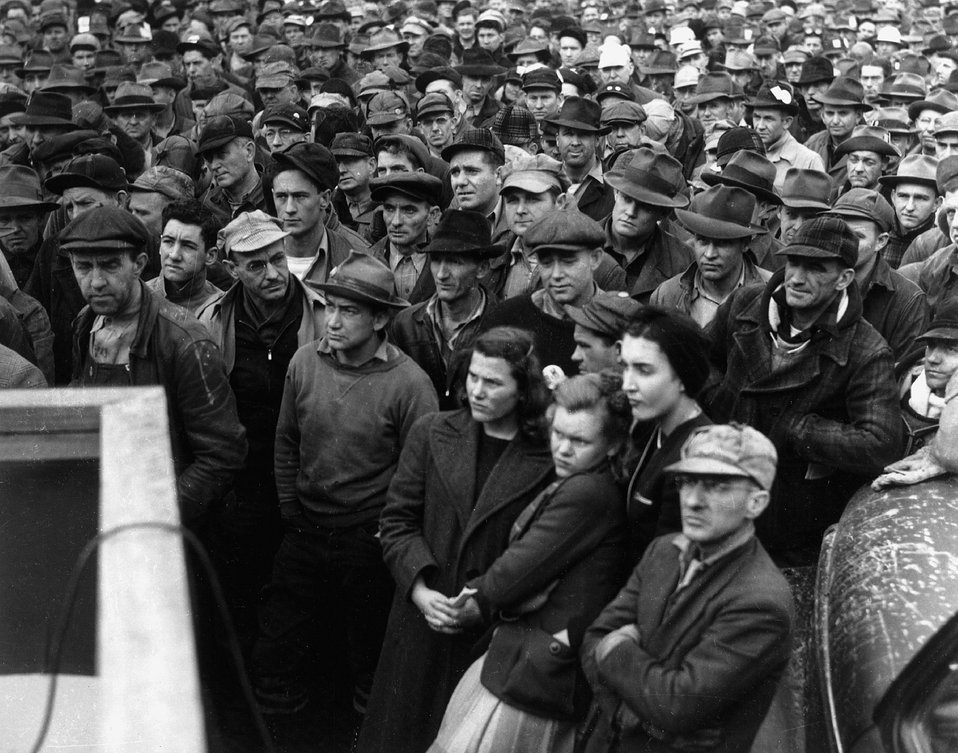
K-25 workers. c. 1944